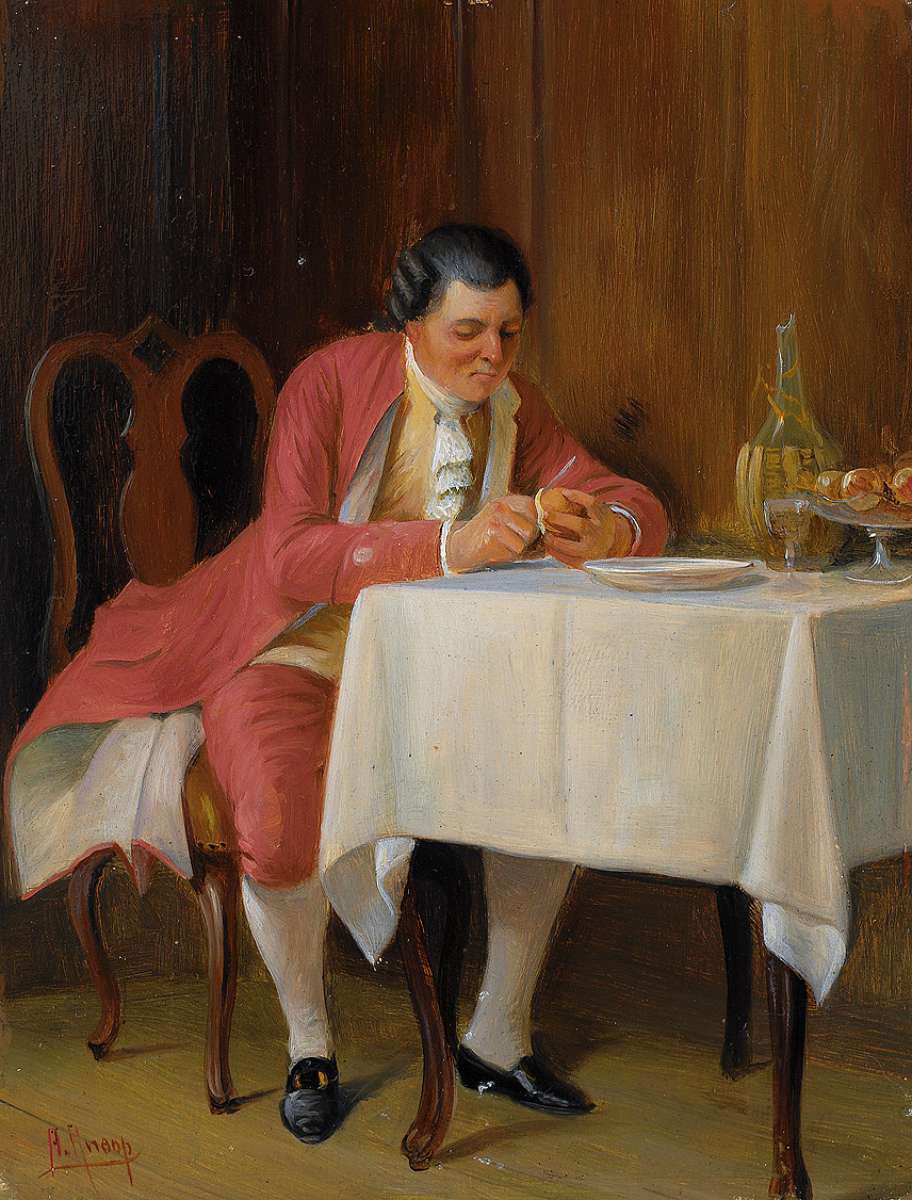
Deutsch: Eleganter Herr im Habit des Rokoko beim Dessert. Öl auf Holz. 17,5 x 13,5 cm